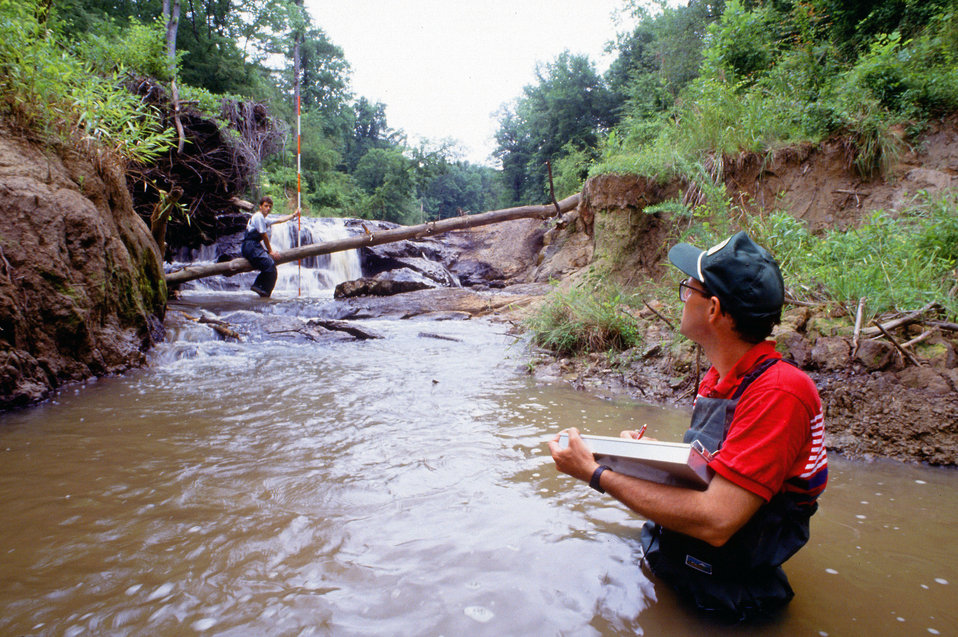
U.S. Department of Agriculture (USDA) Agricultural Research Service (ARS) hydraulic engineer Doug Shields (right) and student research assistant Rick Rauteux observe changes in channel geometry and stream corridor habitats caused by water rushing over a headcut.